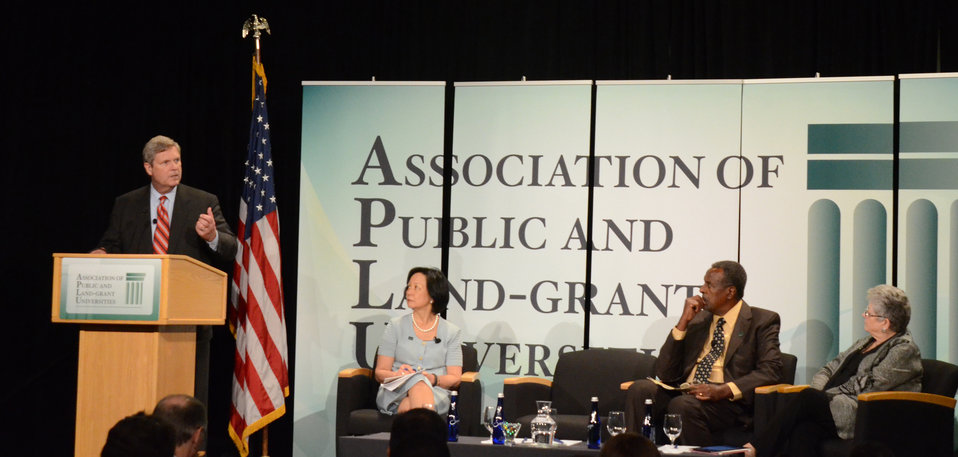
Agriculture Secretary Tom Vilsack speaks at the Association of Land-Grant Universities (APLU) 150th Year Anniversary of the Morrill Act: Advancing the Legacy at the Ronald Reagan Building and International Trade Center in Washington D.C. on Tuesday, June 26, 2012.